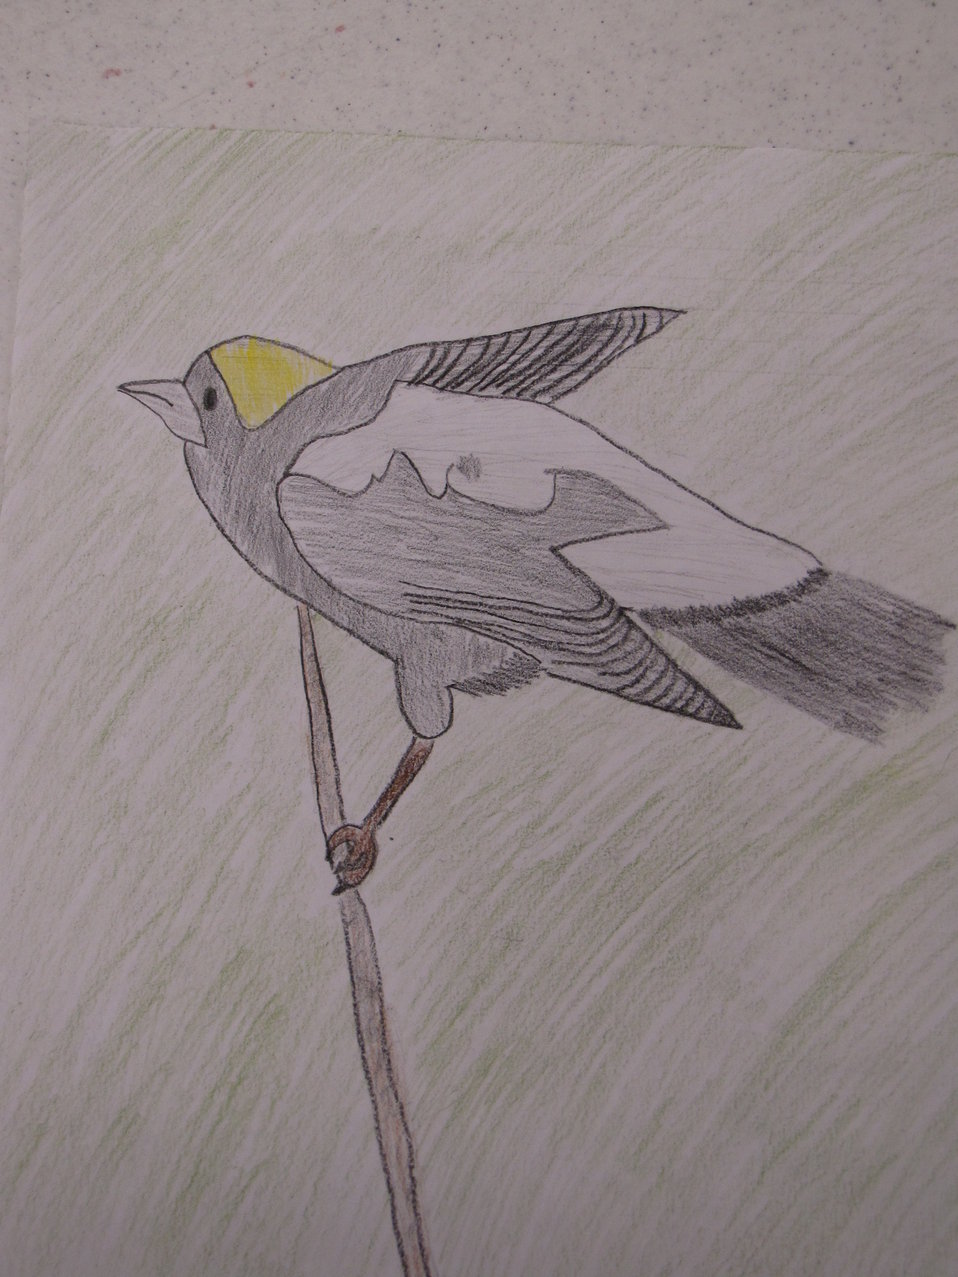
Bobolink, by Russell Gerfen - 5th Grade. One of the class winners for the annual Bird Banner competition. Community school kids draw and color migratory birds and 90 of the winners from over 1000 entries are turned into poster-sized banners to hang down main street of Brigham City this summer.